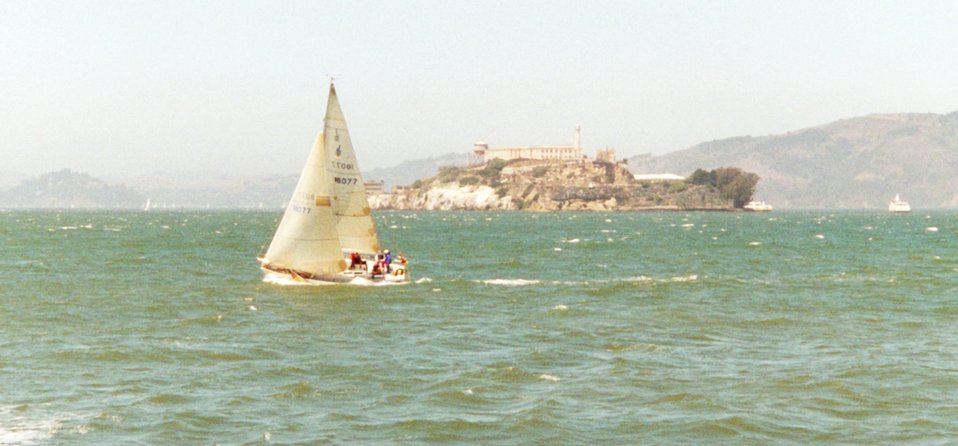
San Francisco Bay sailing. Alcatraz Prison is in the center right of the photo.